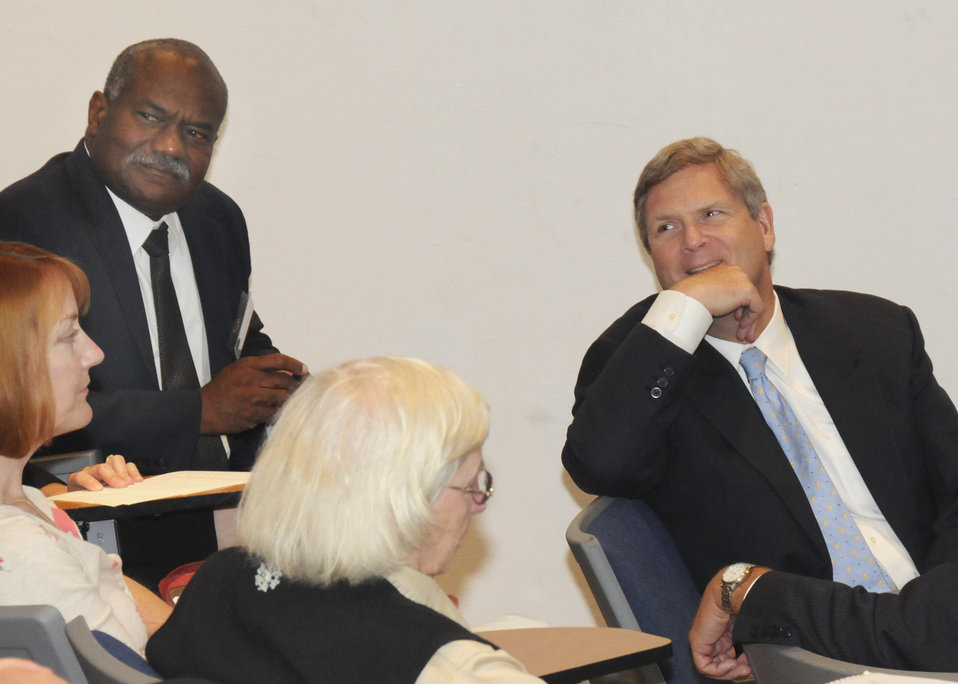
Agriculture Secretary Tom Vilsack listen to comments while attending one of the breakout sessions during the National Rural Summit held at Jefferson College in Hillsboro, MO, on Thursday, June 3, 2010. USDA Photo 10di1388-293.